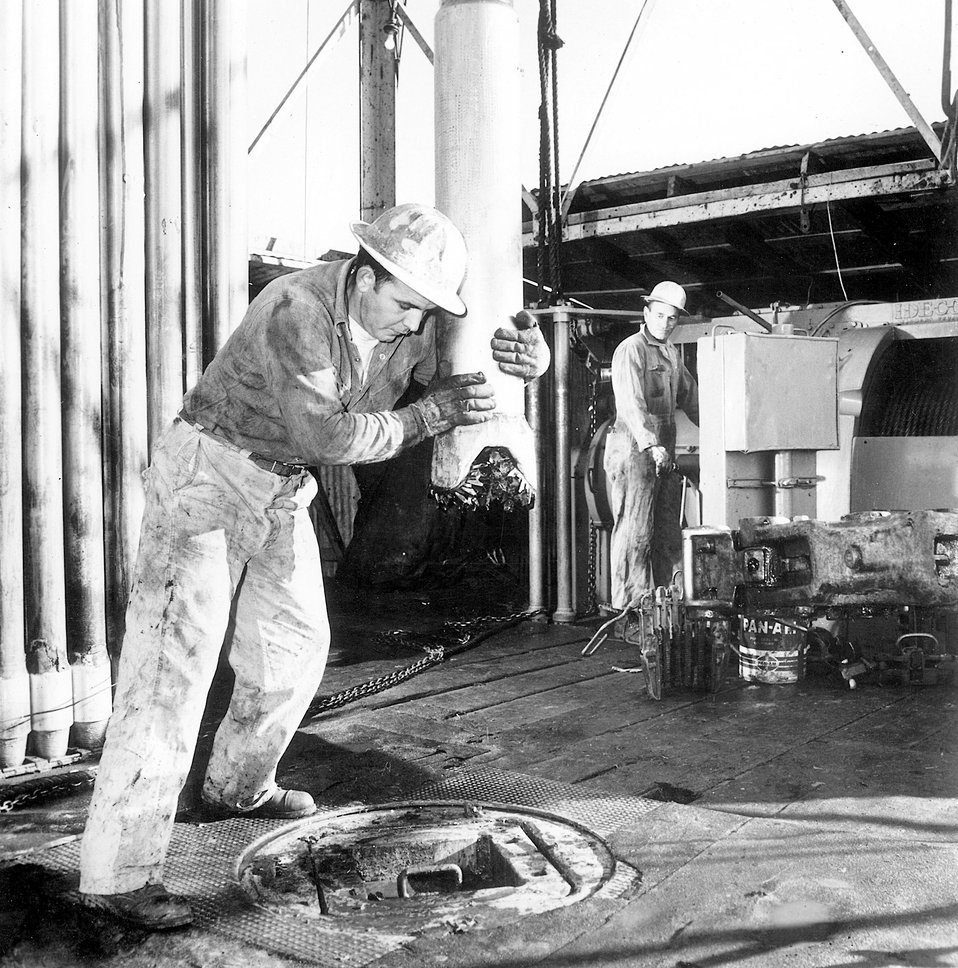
Worker on an offshore drilling rig. c. undated